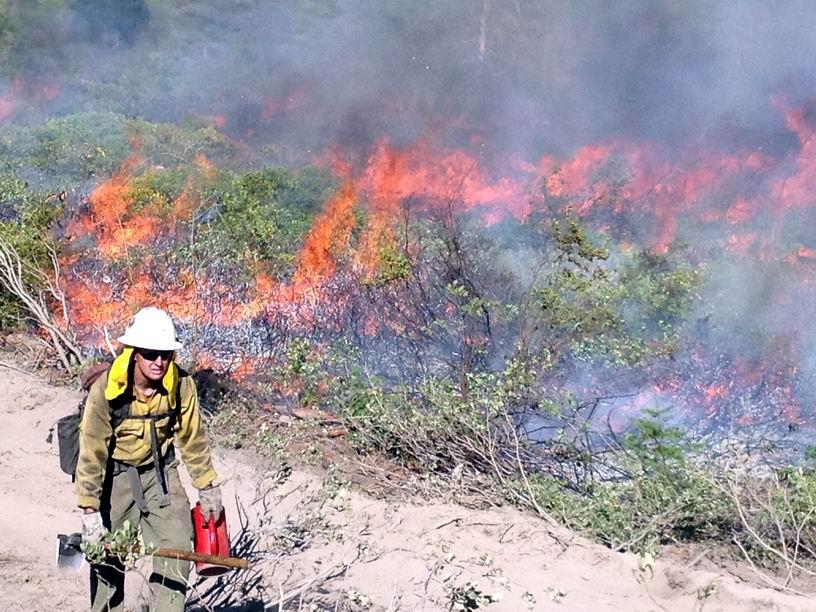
Wolf Creek Interagency Hotshot Crew Member works at burnout area Northeast of Mutton Mountain at the Sunnyside Turnoff Fire. The Sunnyside Turnoff Fire near Warm Springs, OR began on Jul. 20, 2013 is under investigation and has consumed approximately 51,340 acres. The fire is approximately 95% contained.